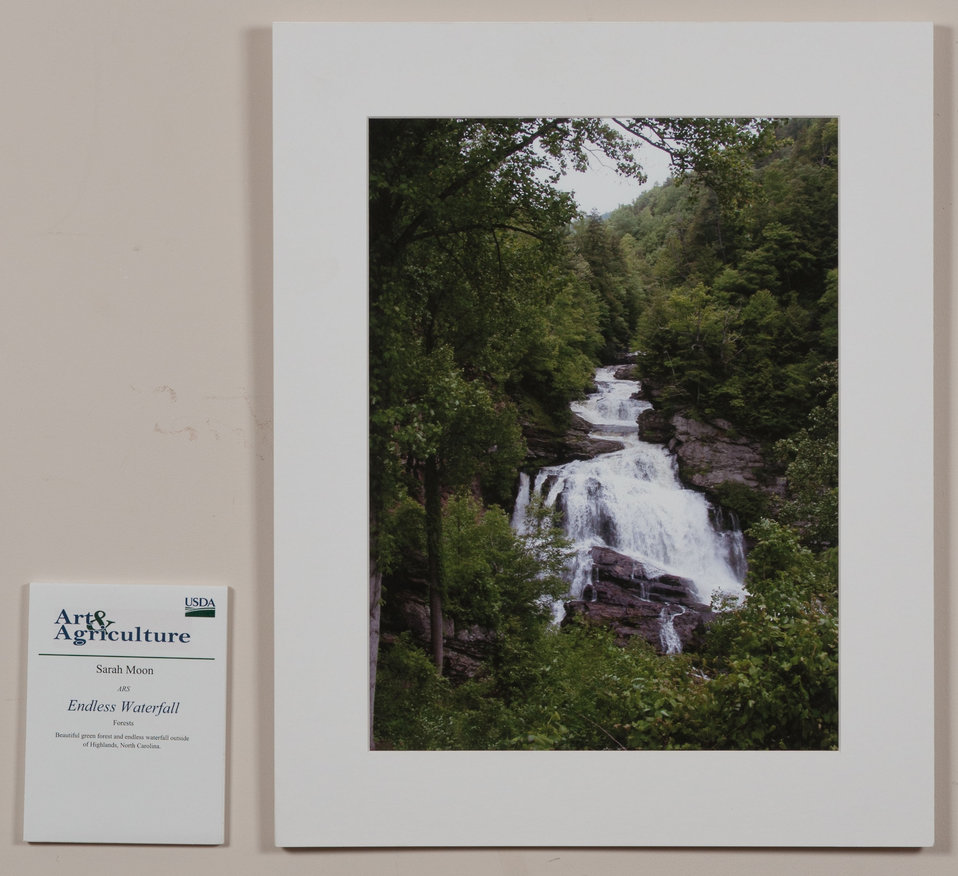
Online Viewer's Choice entries of the 2013 Art & Agriculture, Tuesday, July 9, 2013, in the South Building, Washington, D.C. Themes were expressed by employees from across the department and the contest was open to full-time and part-time USDA employees. Winning artwork will be displayed till the end of the year. U.S. Artistic expression is a creative outlet that is vital for an individual to grow and develop.